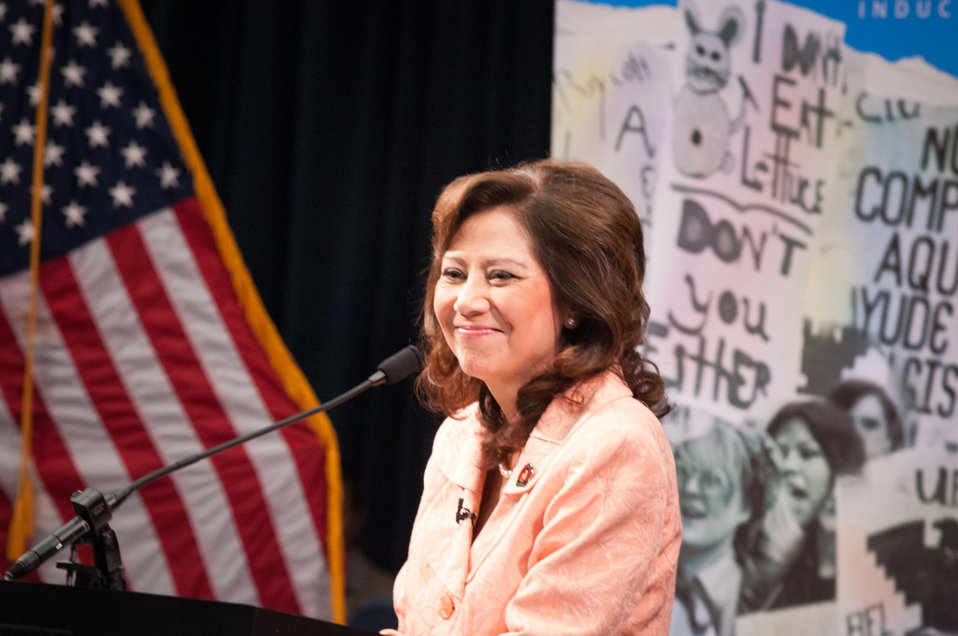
Labor Secretary Hilda Solis spoke of the diligence, dedication and effort by Cesar Chavez, a Mexican-American labor leader who used non-violent methods to fight for the rights of migrant farm workers in the southwestern United States. Chavez founded the Cesar Chavez Foundation, a group that advocates for the rights of farm workers, acting to increase wages and improve the working conditions and safety of farm workers during the dedication of the Cesar E. Chavez Memorial Auditorium at the United States Department of Labor in Washington, D.C., Monday, March 26, 2012.